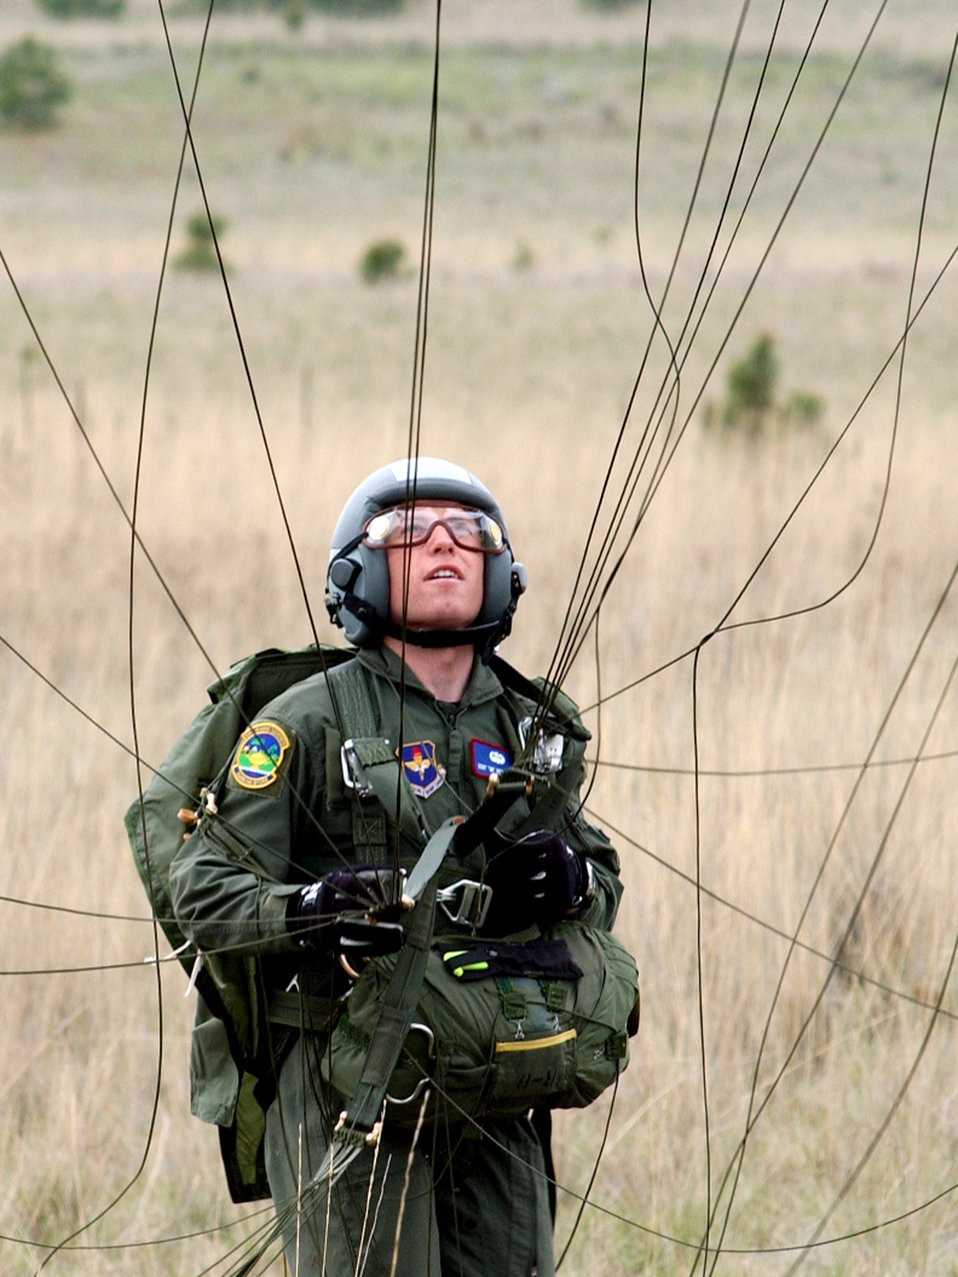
Chute!

FAIRCHILD AIR FORCE BASE, Wash. -- Staff Sgt. Michael Nettleingham, an instructor for the U.S. Air Force Survival School, reels in his parachute after a 1,500-foot jump from an Air Force UH-1N Huey helicopter during weekly training here. The school trains more than 4,000 students per year in the art of survival, evasion, resistance and escape.